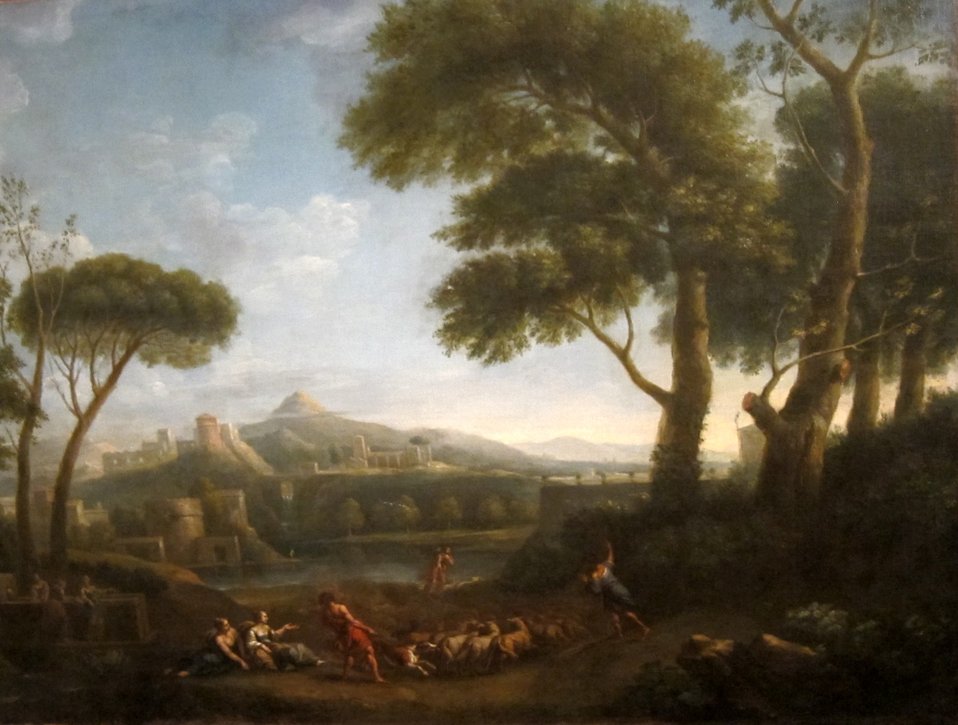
'Landscape with Arcadian Figures and Imaginary Classical Buildings', studio of Jan Frans van Bloemen